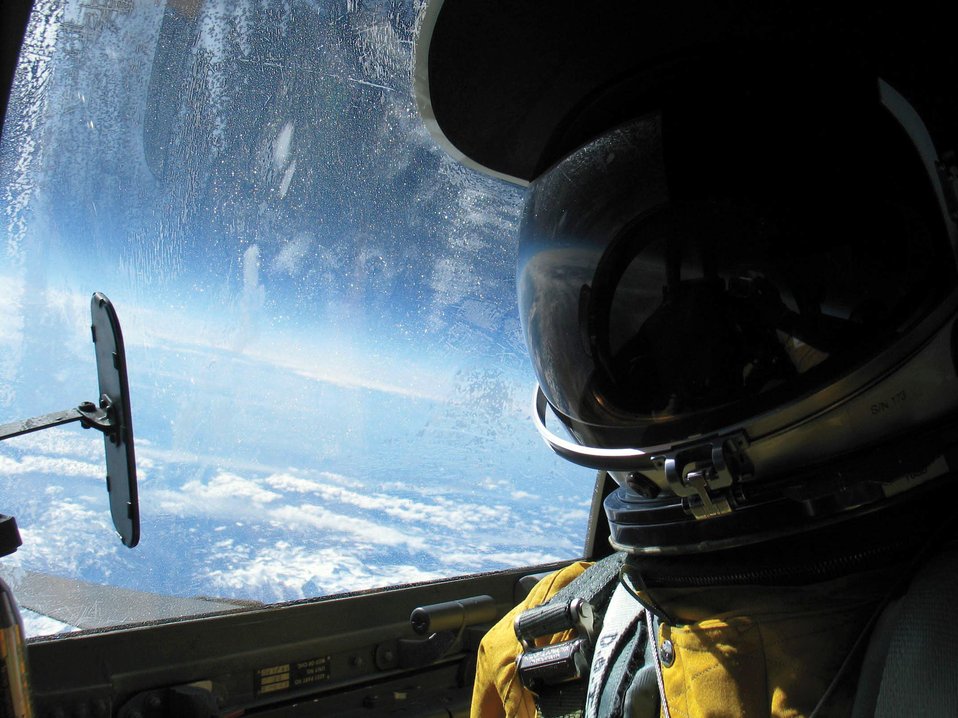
Palmdale detachment takes testing to new heights

Col. Chris Cook gets a sweeping view of California from 71,000 feet during a recent flight in a U-2 Dragon Lady. Colonel Cook is the 412th Operations Group commander at Edwards Air Force Base, Calif.